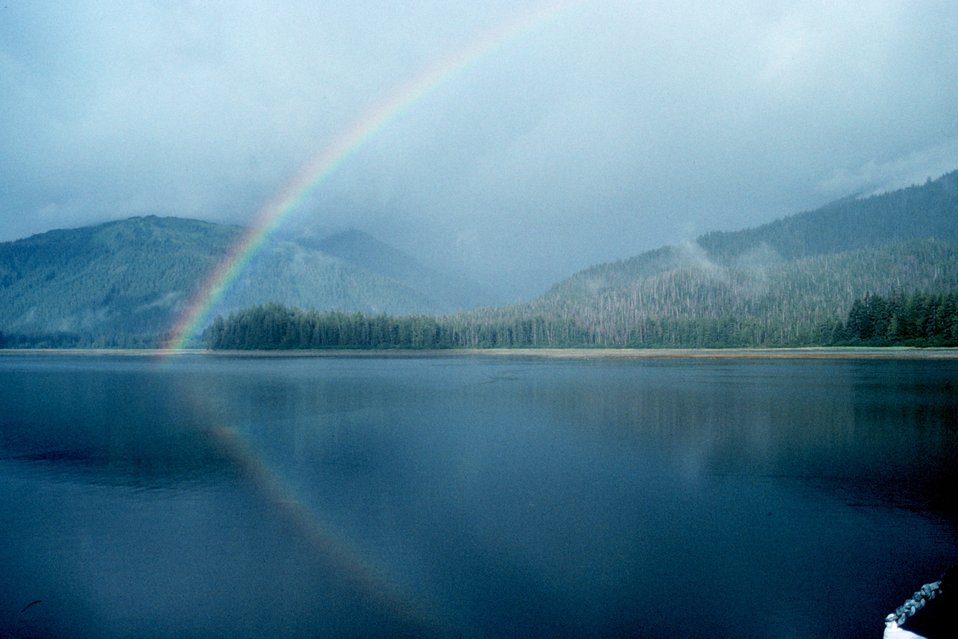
An Alaskan rainbow - note reflection on the water.